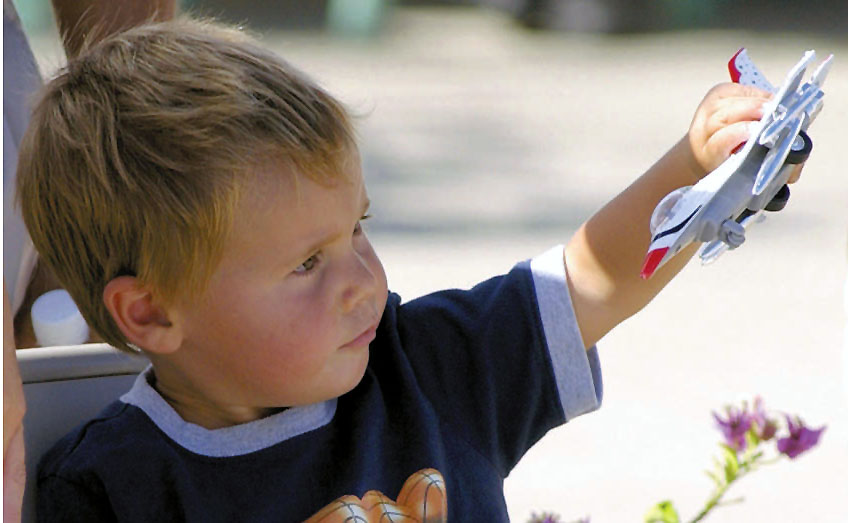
Into the wild blue yonder...

HICKAM AIR FORCE BASE, Hawaii -- Two-year-old Patrick Jenkins, future Thunderbird pilot, flies his toy jet at the Hickam Friends and Neighbors Weekend. Patrick and his family were among the nearly 100,000 people who came to see the Thunderbirds perform here for the first time.